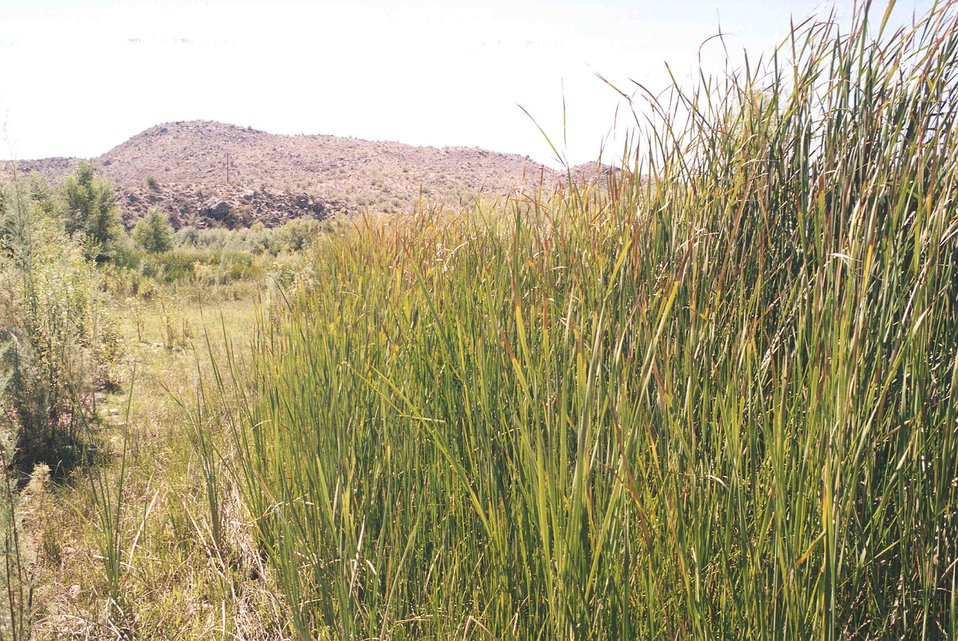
September 2001 "after" photo of Yuma Clapper Rail habitat on the Big Sandy River, prior to grazing management change. Compare to "before" photo KFO4.